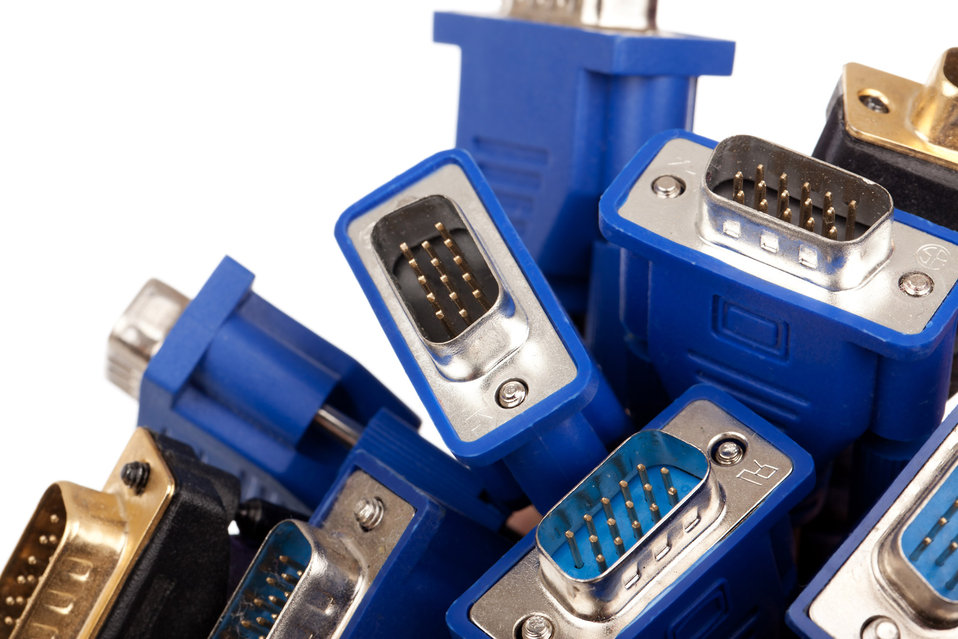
Vga cables

Many vga cable connectors isolated on white background.